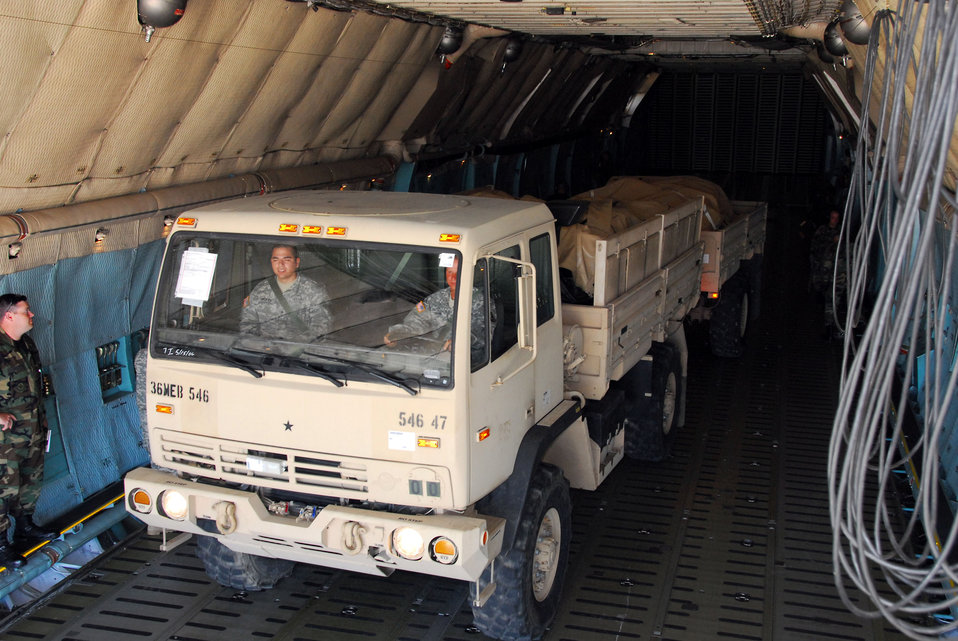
C-5 equals max capacity

Army personnel off-load trucks May 12 from a C-5 Galaxy at Hulman Field in Terre Haute, Ind., in support of Exercise Ardent Sentry. Ardent Sentry is designed to hone coordination between the Department of Defense as well as federal, state, local and private agencies in a series of challenging scenarios ranging from natural disasters to terrorist incidents.